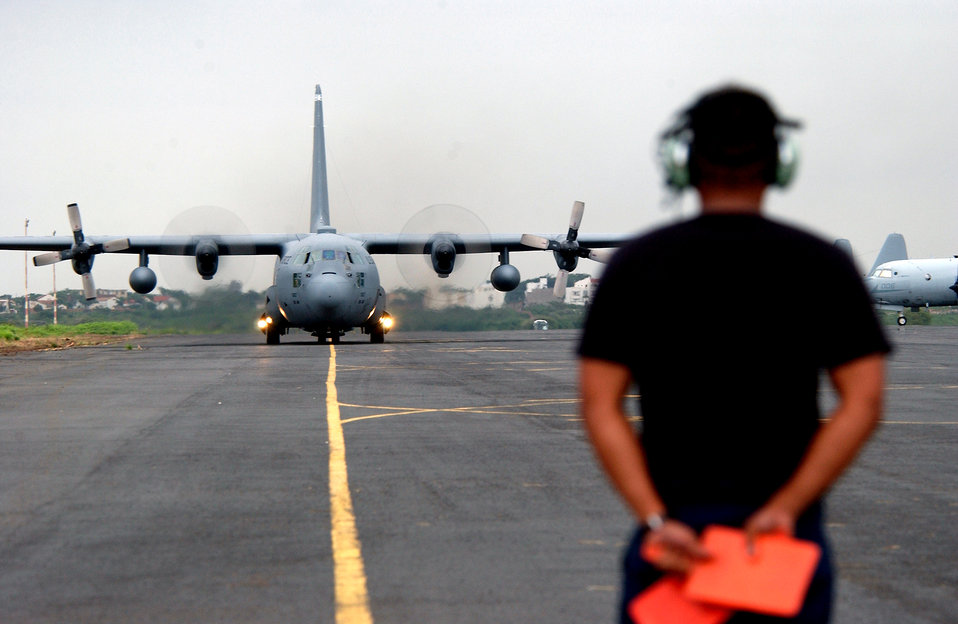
Hercules in Africa

DAKAR, Senegal -- Senior Airman Brandon Hashida waits to guide in a C-130 Hercules as it taxis after landing here. Hashida is deployed from Ramstein Air Base, Germany to the 398th Air Expeditionary Group.